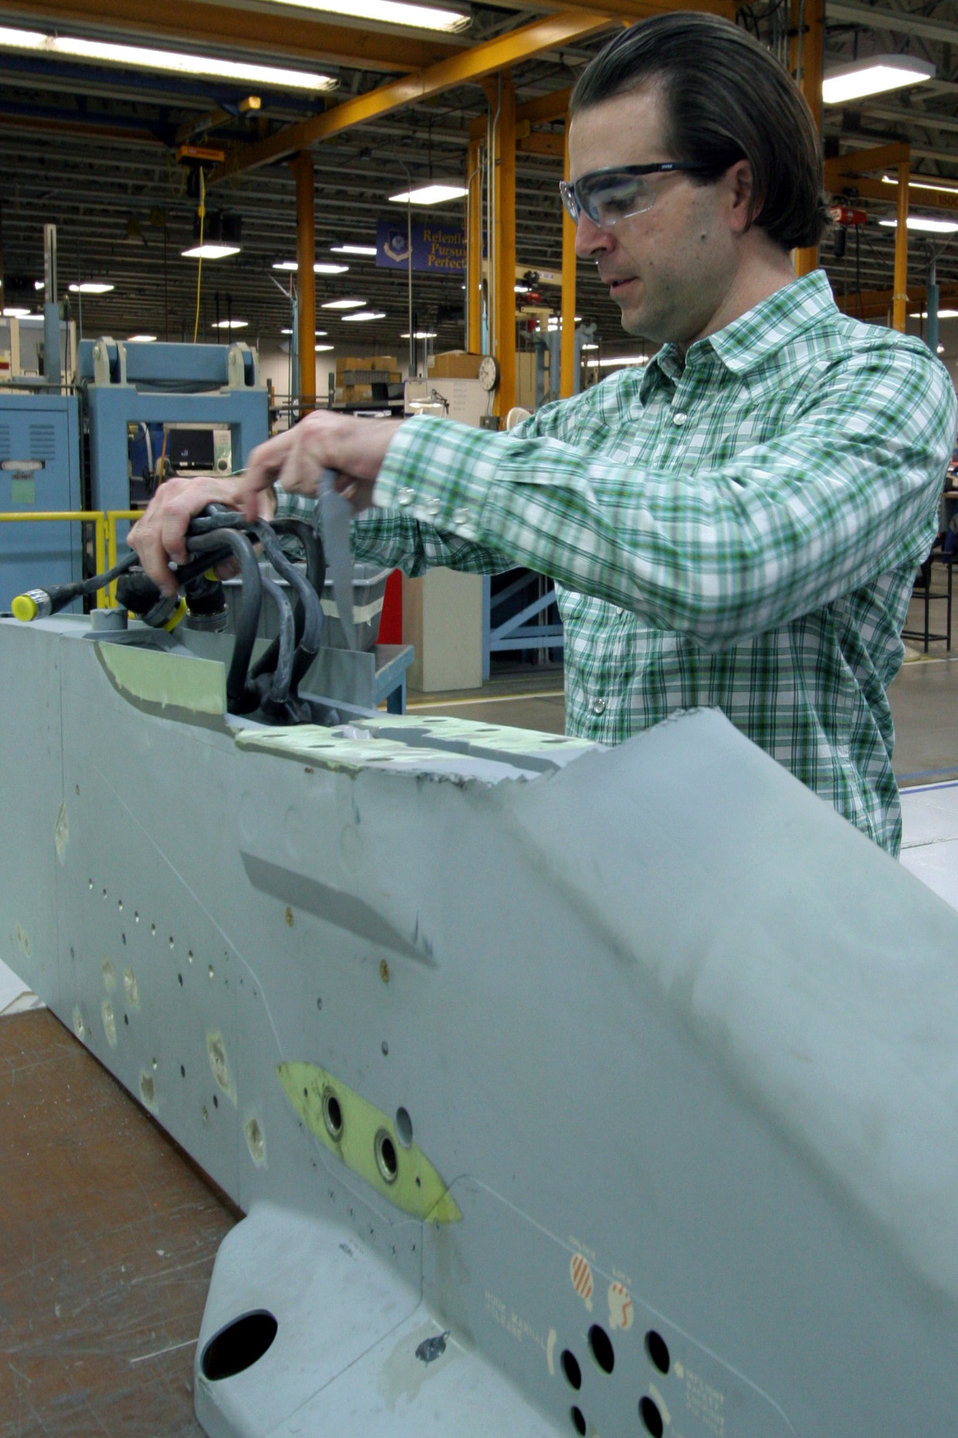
Falcon maintenance

HILL AIR FORCE BASE, Utah (AFPN) -- Timothy Smith stows cannon plugs in a newly machined pylons on the F-16 Fighting Falcon. The updated pylons ensure the aircraft can make use of 21st century smart weapons. Mr. Smith is an ordnance systems mechanic with the 309th Commodities Maintenance Squadron.